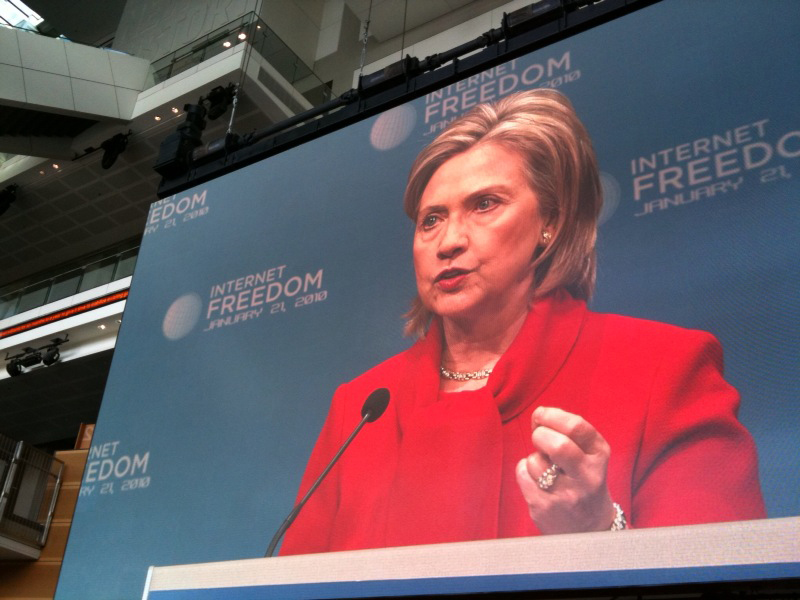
Secretary Clinton Delivers Remarks on Internet Freedom

U.S. Secretary of State Hillary Rodham Clinton delivers remarks on Internet Freedom at the Newseum in Washington, DC, January 21, 2010.